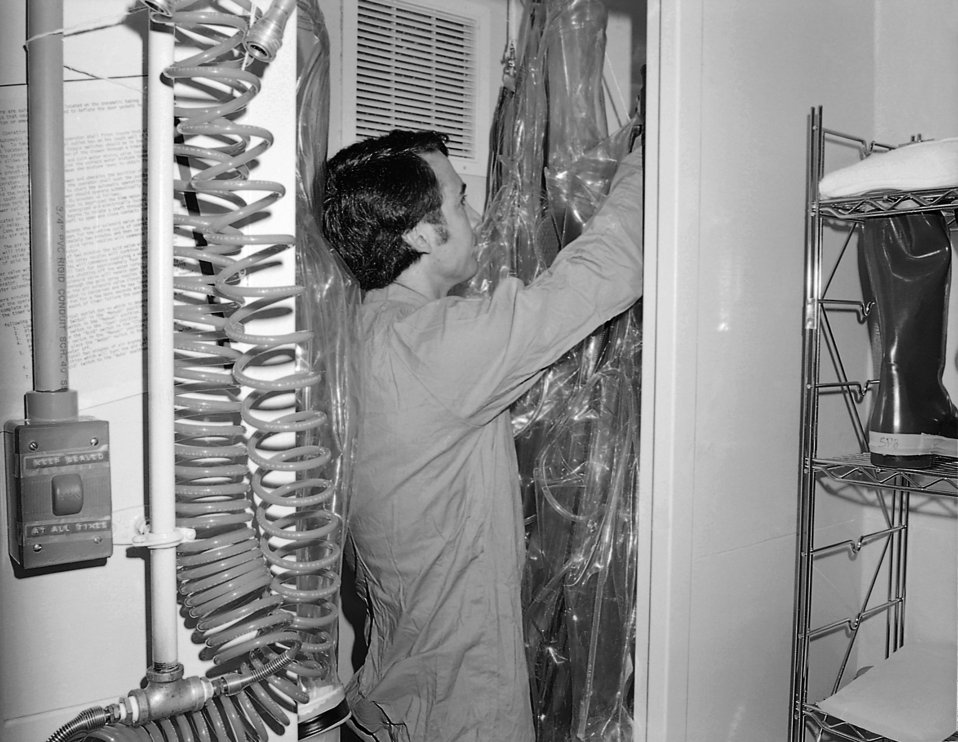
This 1978 photograph shot for purposes of creating a training package, showed Dr. J.V. Lange removing a Maximum Containment Laboratory positive-pressure suit from its storage room, which he'll don before entering the containment laboratory environment.